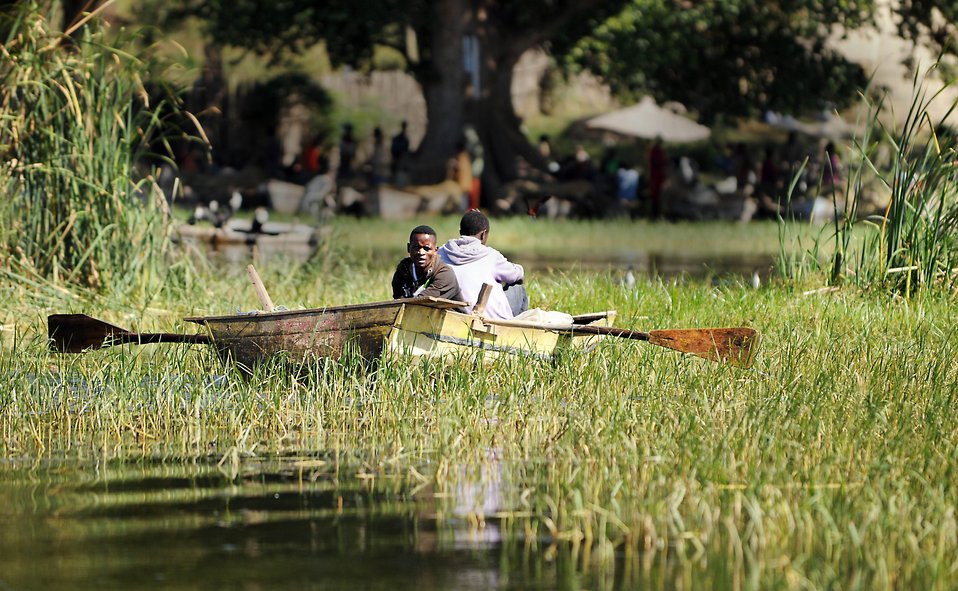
144 hours in Ethiopia: Africa remembers

Two fishermen guide their handmade boat toward the fish market in Hawassa, Ethiopia, Dec. 8, 2011. The fish caught from the adjacent lake are sold to residents both in town and in the surrounding villages.